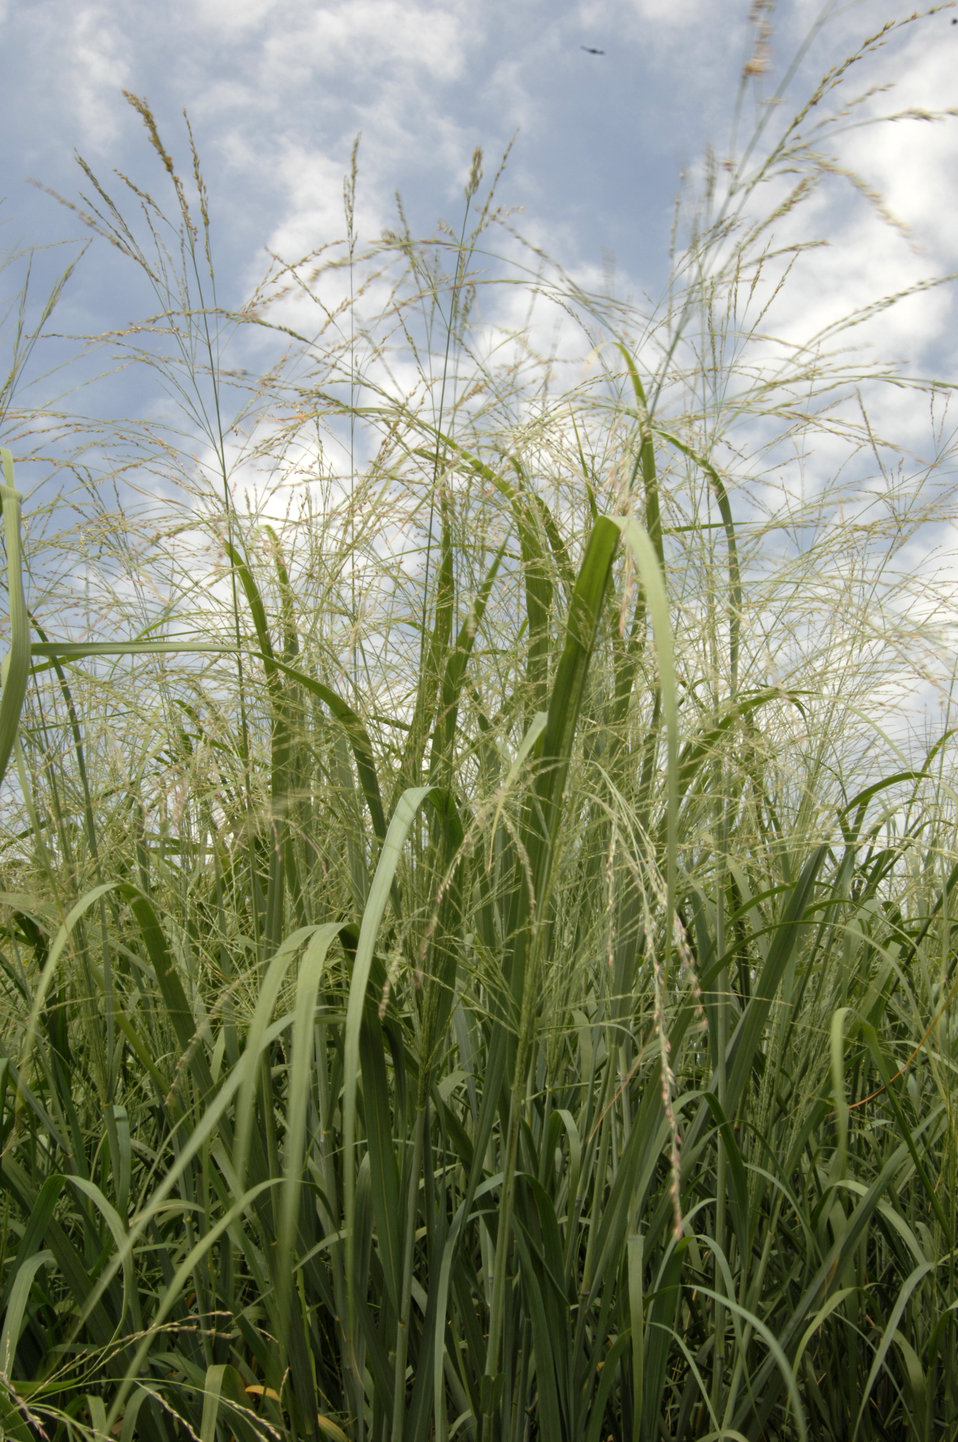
The Power Plant garden at the National Arboretum in Washington, D.C., displays a variety of plants that may provide a valuable and renewable source of bioenergy for America. Bioenergy is a renewable energy made available from materials derived from biological sources. Switchgrass is both a perennial and self-seeding crop and farmers do not have to plant and reseed after annual harvesting. An established switchgrass stand can survive for ten years or longer. Unlike corn, switchgrass can grow on marginal lands and requires relatively modest levels of chemical fertilizers. Overall, it is considered a resource-efficient, low-input crop for producing cellulosic ethanol. This photograph shows switchgrass growing in the Power Plant garden at the National Arboretum in Washington, D.C. on August 19, 2008.